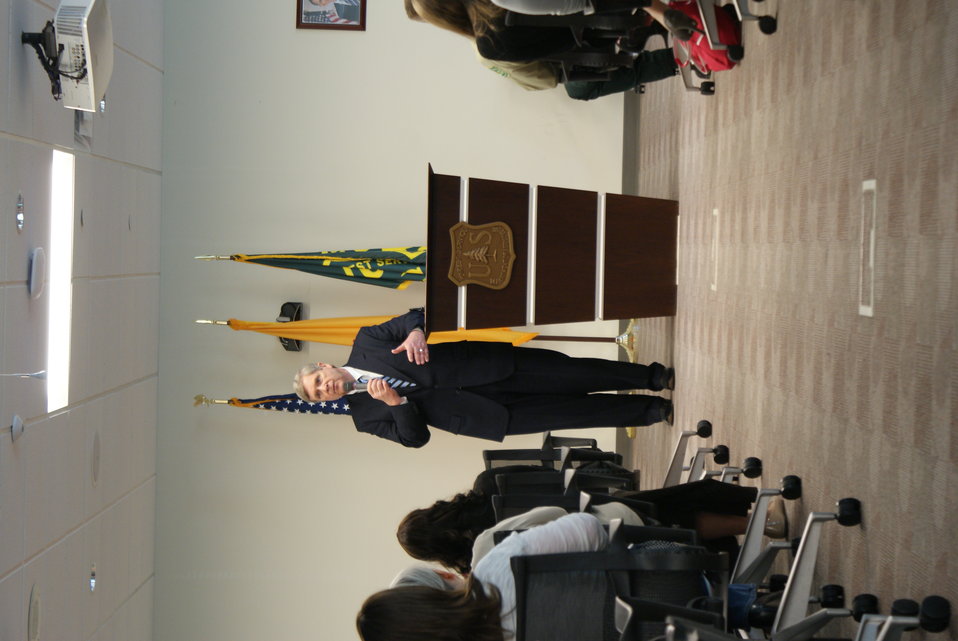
Agriculture Secretary Tom Vilsack holds a town hall meeting with U.S. Department of Agriculture (USDA) employees at the Albuquerque Service Center in Albuquerque, NM on Mar. 10, 2014. USDA photo M. Chavez.